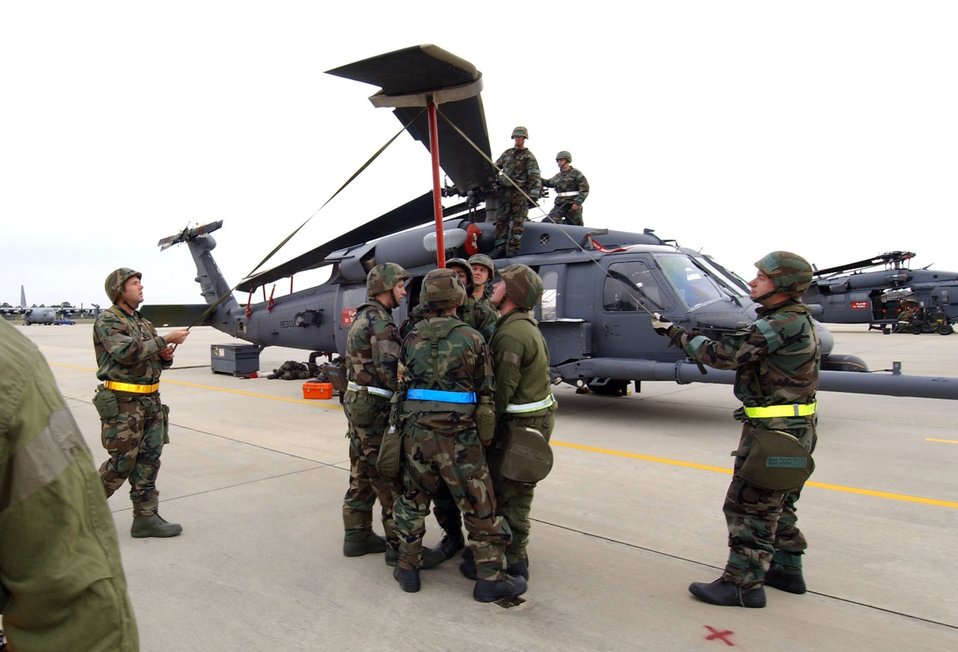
Steady as she goes

MOODY AIR FORCE BASE, Ga. -- Airmen work on an HH-60G Pave Hawk helicopter during the kick-off of the 347th Rescue Wing's operational readiness inspection. The Air Force's only combat search and rescue wing is undergoing its first ORI since transitioning to Air Force Special Operations Command in 2003.